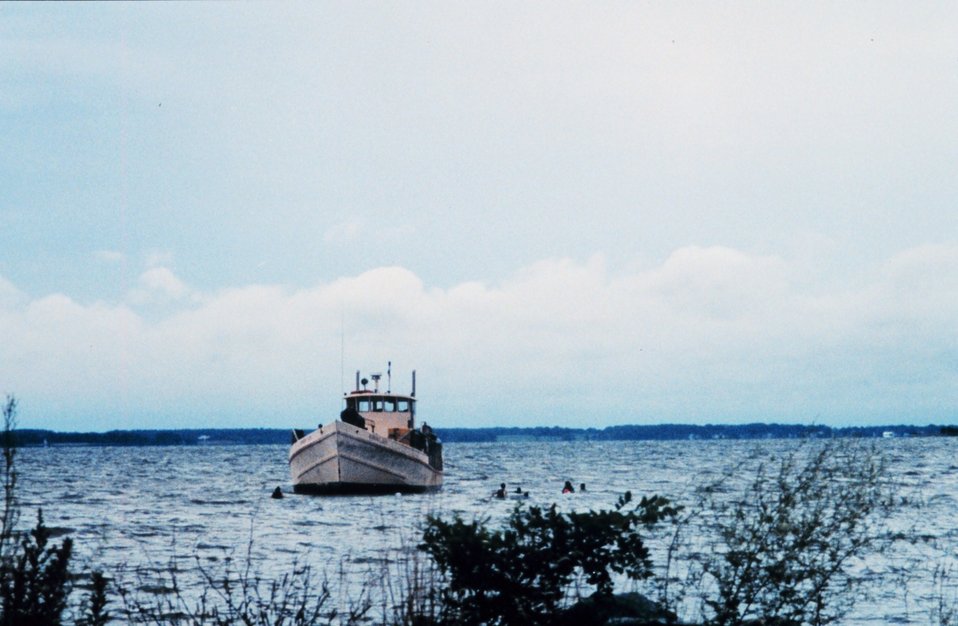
'Buy boat' ROBERT LEE, working with the Oyster Recovery Partnership, maneuvers among pallets of oyster hatchery bags. Volunteers from the Bay Bus Partnership Project in the water prepare the pallets to be loaded onto the boat.